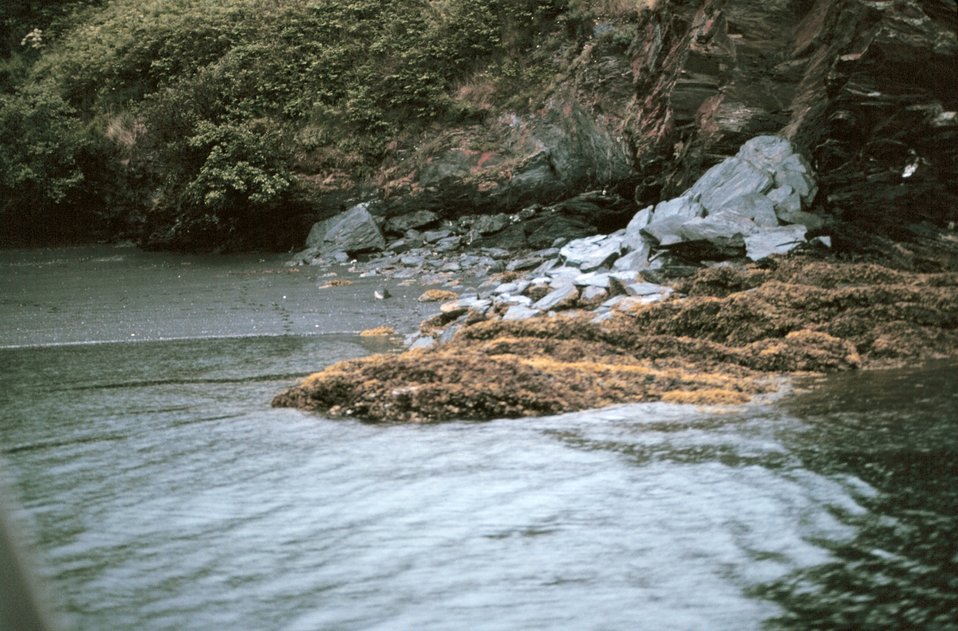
A small cove on Piridon Bay.